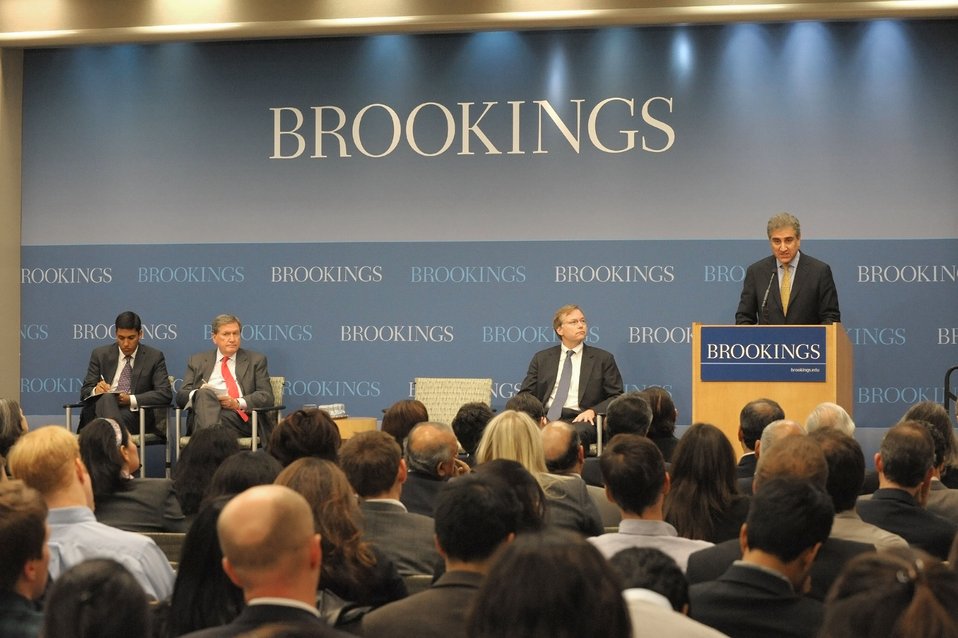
Pakistani Foreign Minister Qureshi delivers remarks at the panel, U.S. and Pakistan: Partners in Development, hosted by Asia Society and Brookings, with USAID Administrator Rajiv Shah (far left), Special Representative for Afghanistan and Pakistan Ambassador Richard C. Holbrooke (second from left), and New American Foundation President Coll (third from left), at the Brookings Institution in Washington, D.C., on October 20, 2010.